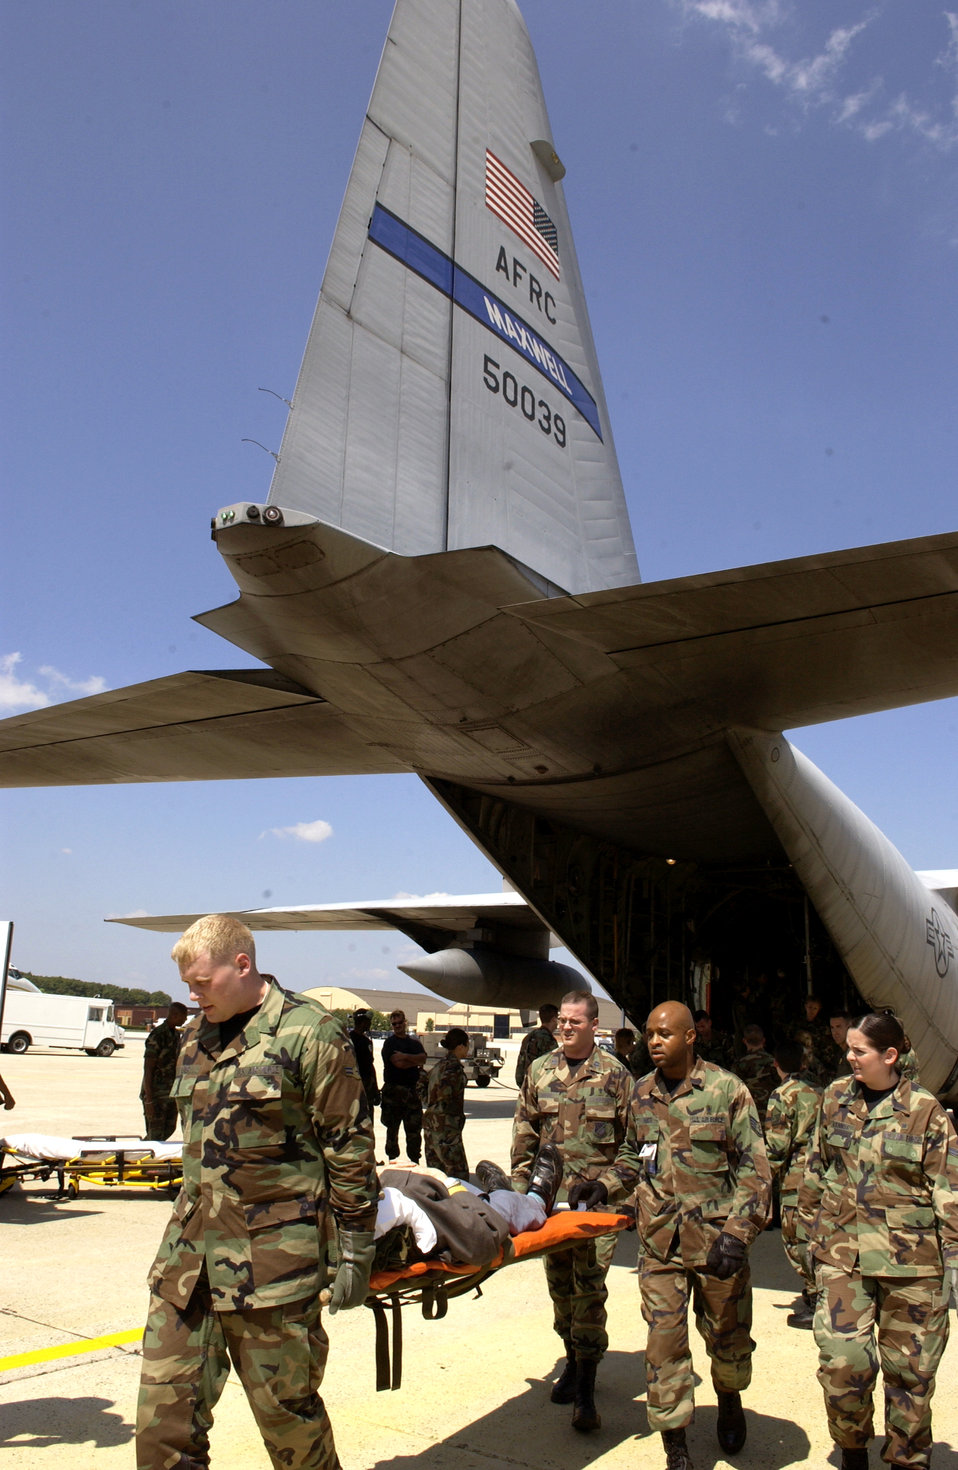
Evacuation

ANDREWS AIR FORCE BASE, Md. -- Airmen with the 908th Airlift Wing at Maxwell Air Force Base, Ala., the 375th Aeromedical Evacuation Squadron at Scott AFB, Ill., and the 89th Medical Group here help transport veterans from the Armed Forces Home in Gulfport, Miss., after Hurricane Katrina decimated the area. The veterans were flown by a C-130 Hercules from Maxwell to here where they were then taken to the Armed Forces Home in Washington, D.C.